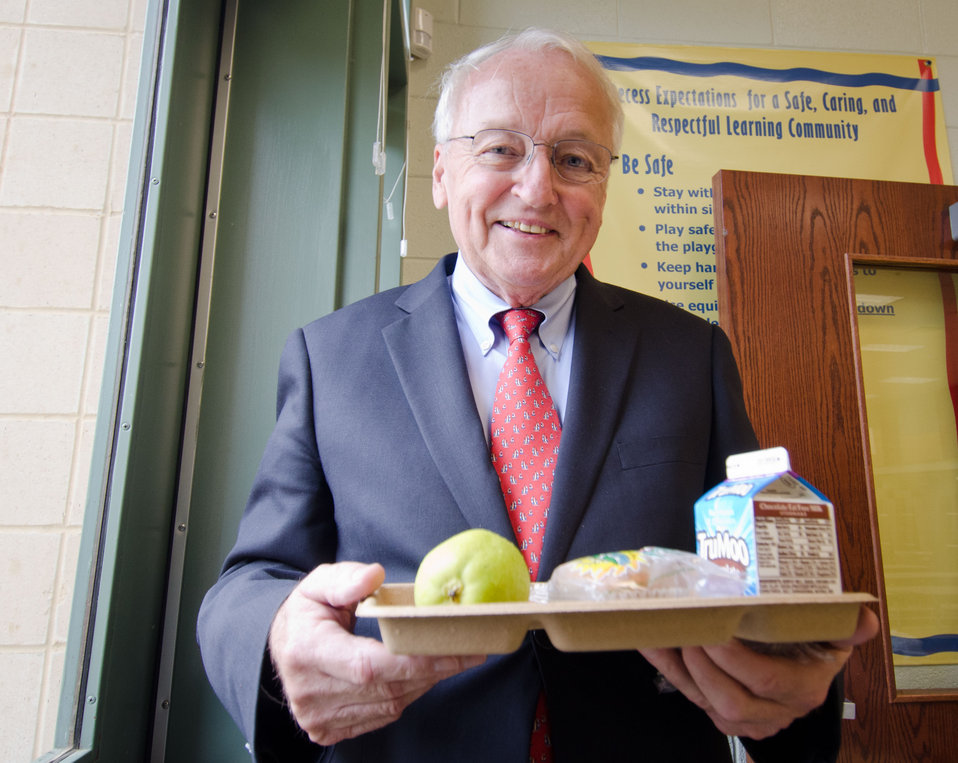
Under Secretary for Food, Nutrition and Consumer Services Kevin Concannon enjoyed a lunch during his visit to Nottingham Elementary School in Arlington, VA, on Wednesday, October 12, 2011. For this National School Lunch Week event, farmers from Big Riggs Farm, Romney, WV and Maple Avenue Market Farm, Vienna, VA were very popular with the students today. The menu included roasted chicken, roasted butternut squash with dried cranberries, farm fresh mixed lettuce salad, turkey wraps, pita wedges, hot muffins, carrots, Asian pears and more.